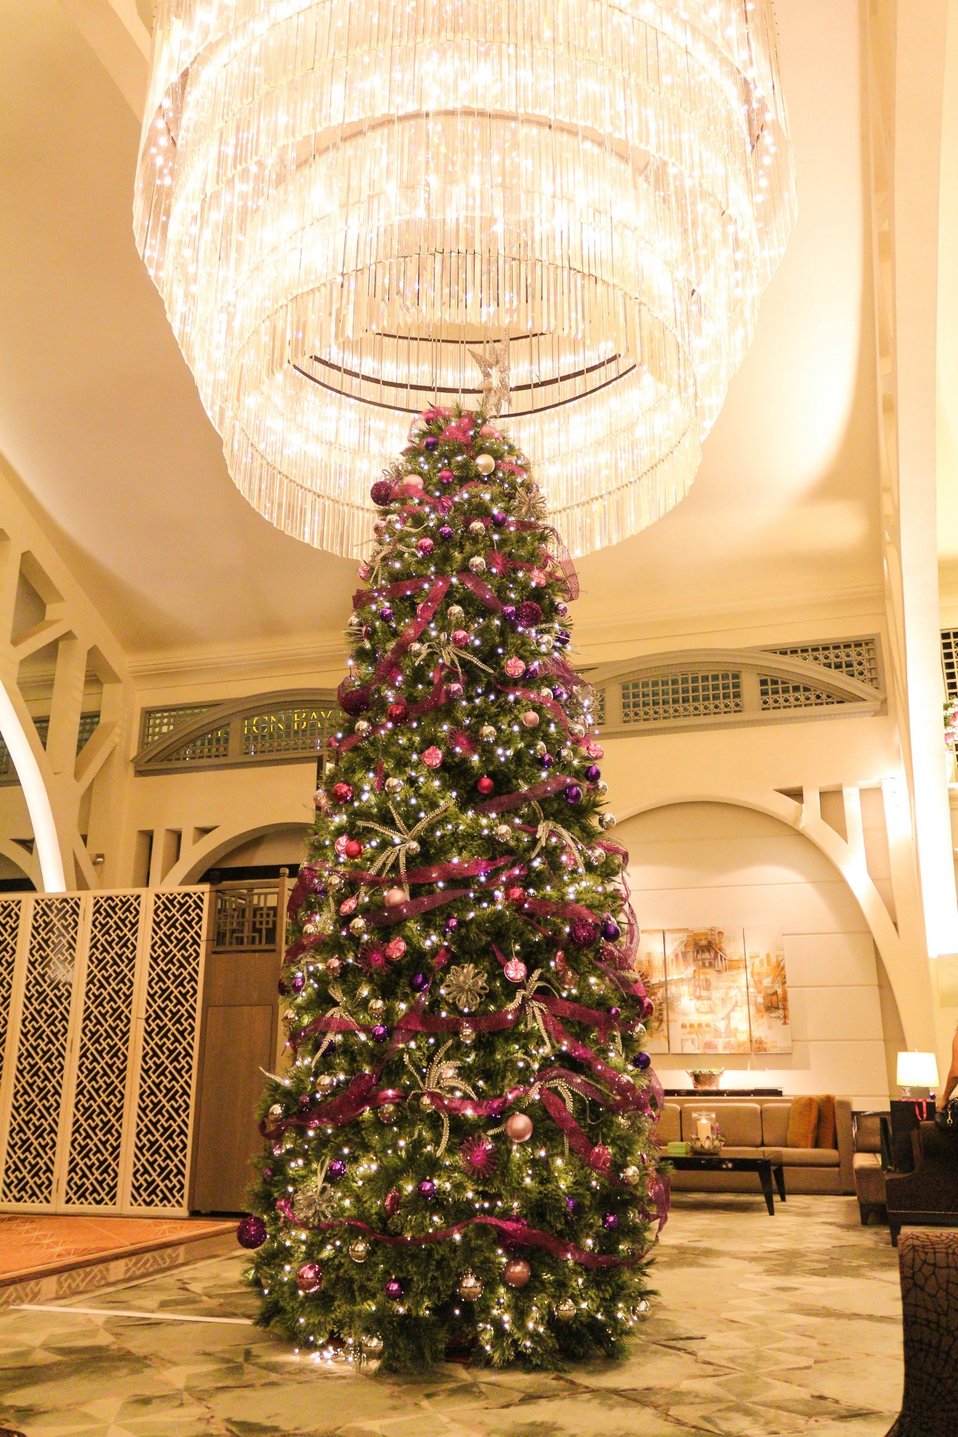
Christmas tree with chandelier.